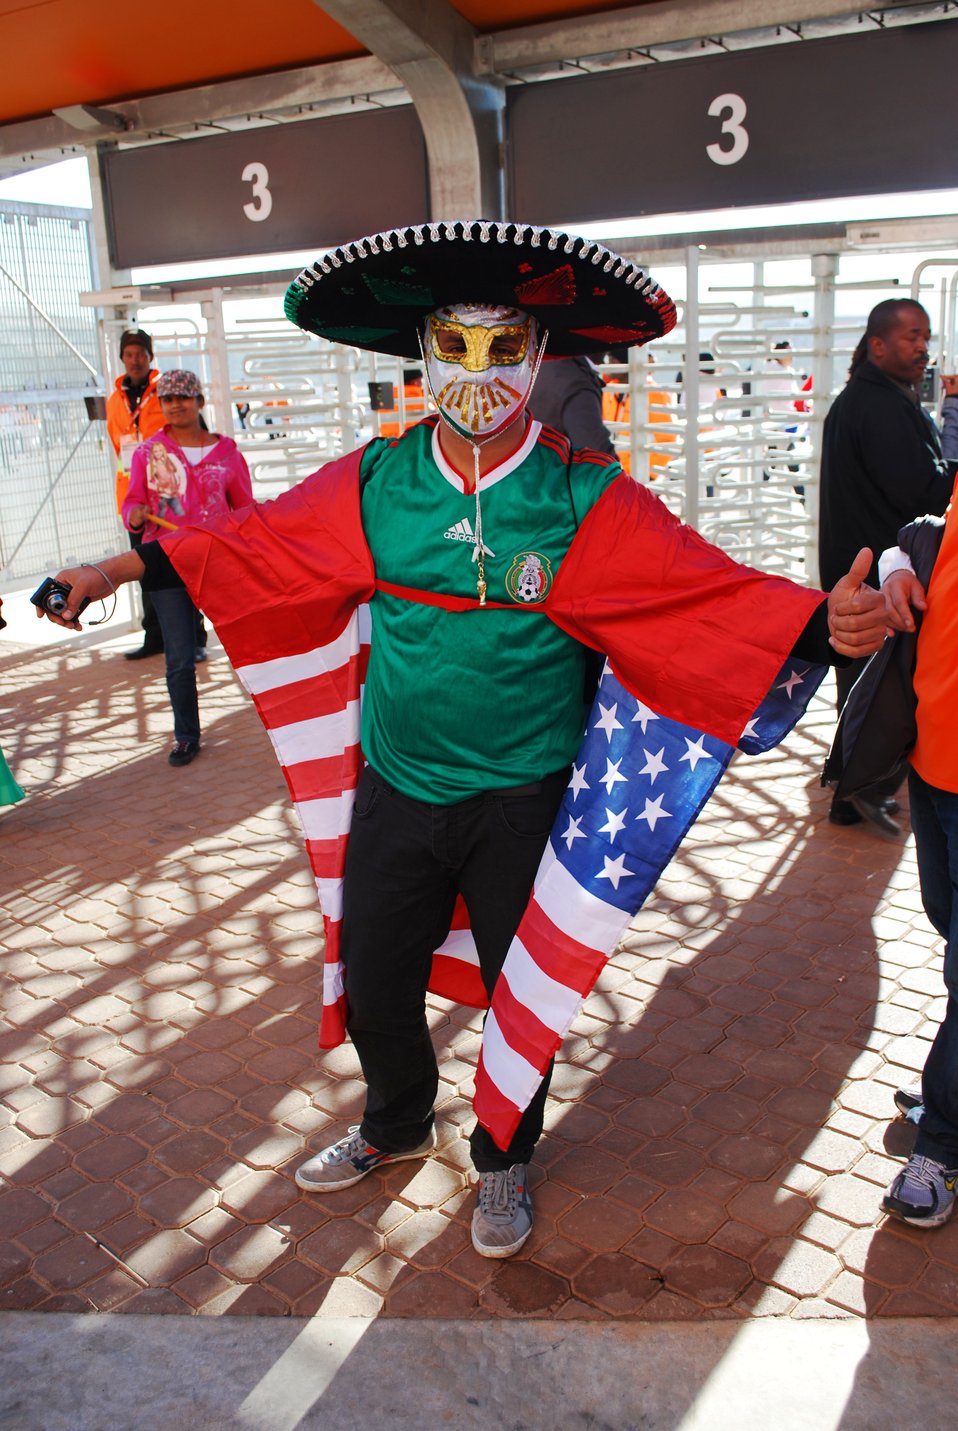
A Mexican-American Fan Displays His World Cup Regalia

A fan displays his Mexican-American regalia before entering the U.S. vs. England World Cup soccer match at Royal Bafokeng Stadium in Rustenburg, South Africa, on June 12, 2010.